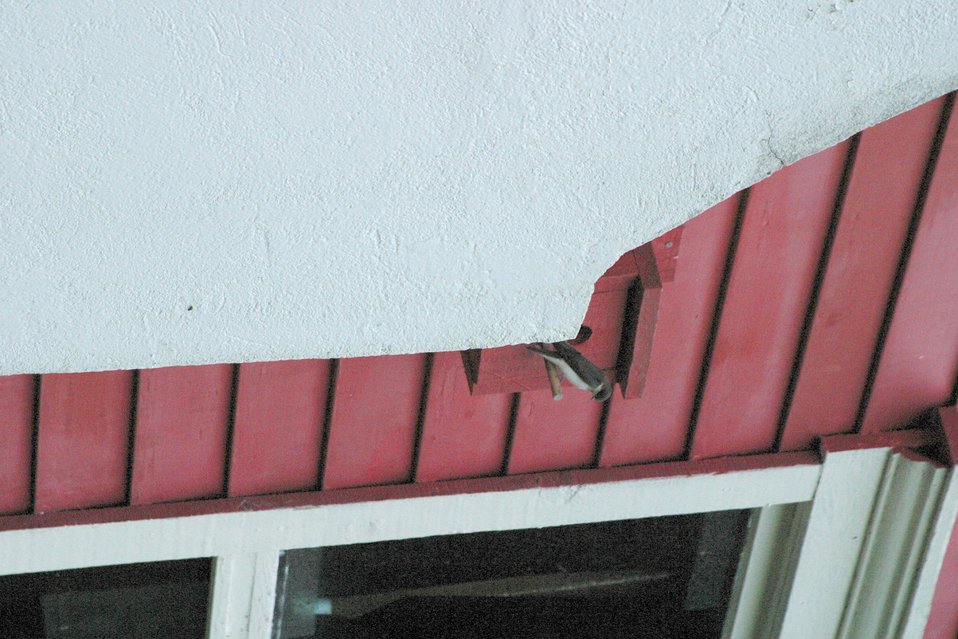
Bird Boxes provide nesting habitat.